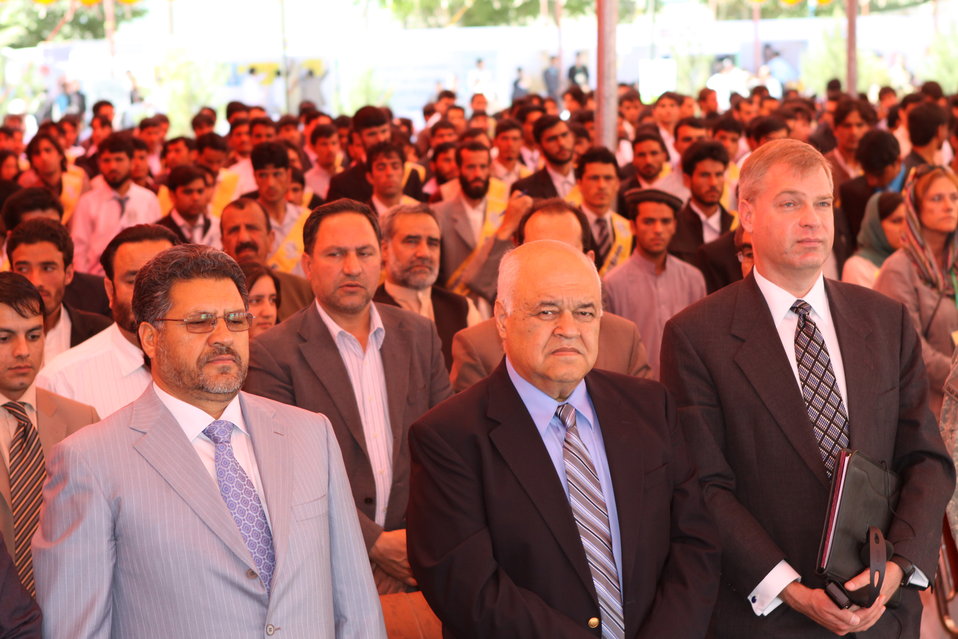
100522 ATVI Graduation 048